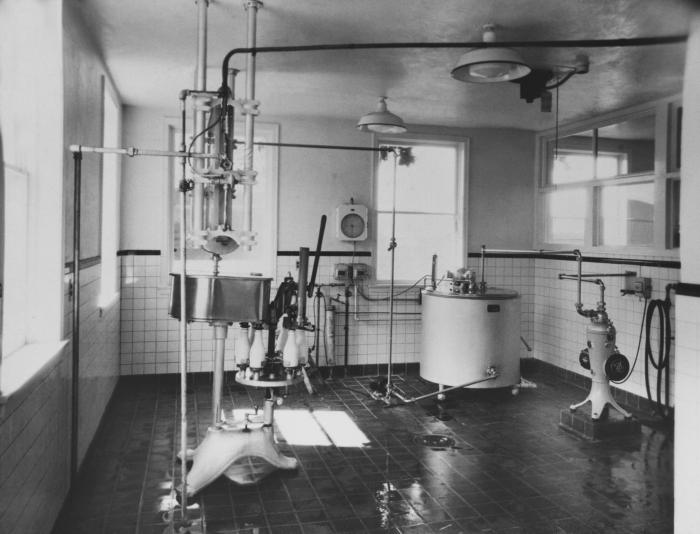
This historic 1940 photograph showed the interior of a milk pasteurization plant that was part of a Wabasha, Minnesota dairy.